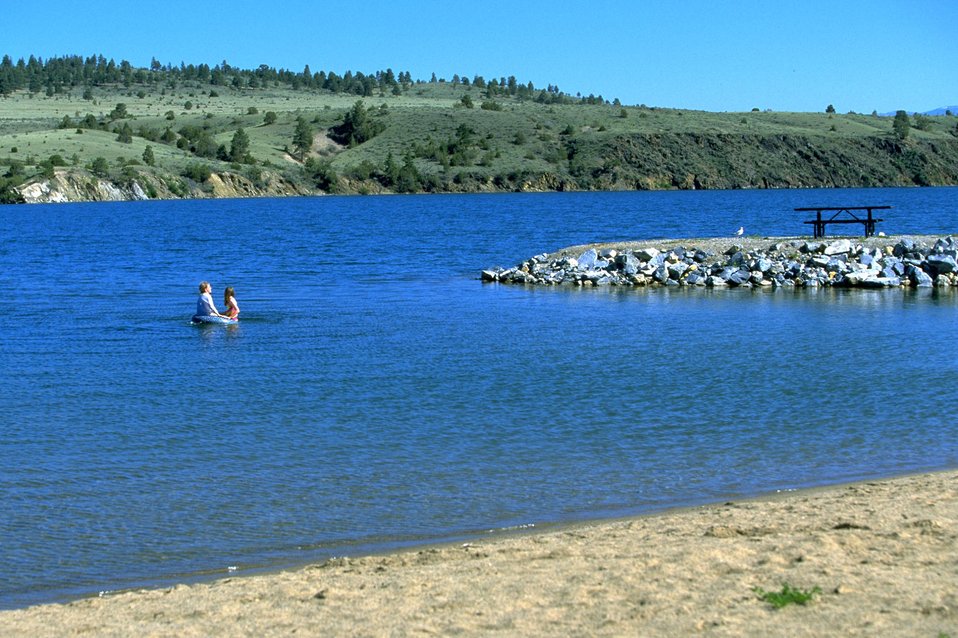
Children playing in Hauser Lake